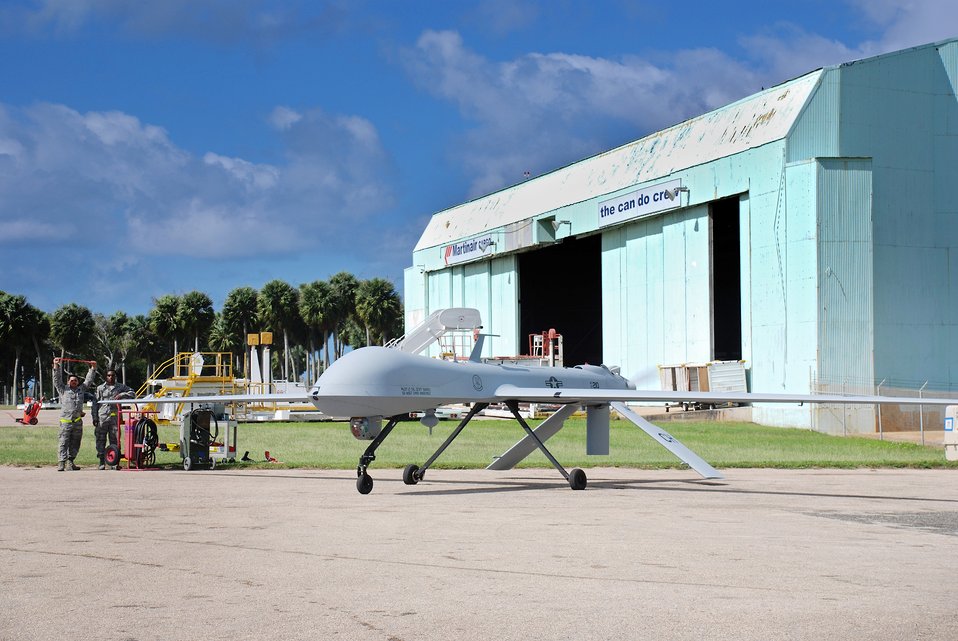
Haiti Earthquake Relief

An RQ-1 Predator prepares for takeoff at Aeropuerto Rafael Hernandez Jan. 27, 2010, outside Aguadilla, Puerto Rico. The remotely piloted aircraft are operating out of Puerto Rico in support of Operation Unified Response in Haiti. Airmen from Creech Air Force Base, Nev., are providing 24-hour-a-day full-motion video in real time to international relief workers on the ground in order to speed humanitarian aid to remote and cut-off areas of the country following the earthquake Jan. 12, 2010.